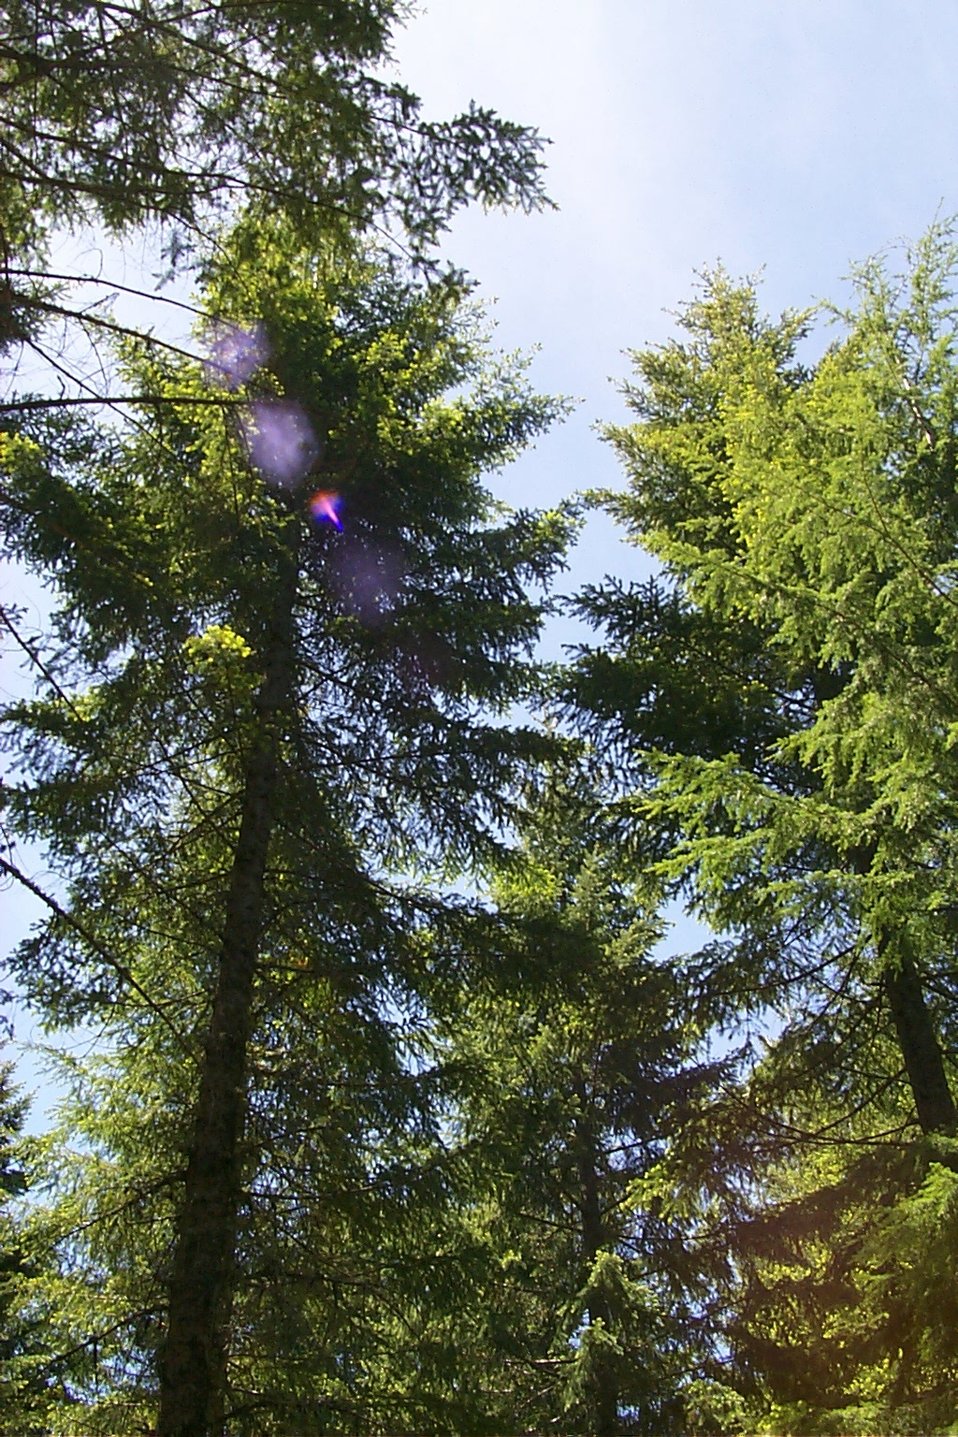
Camas East Timber Sale in Late Successional Reserve.